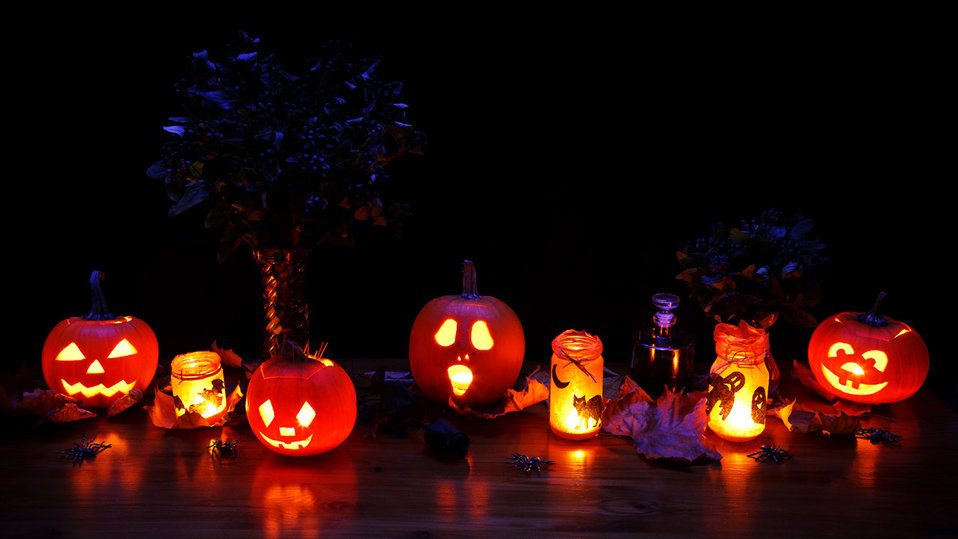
Halloween decoration

Illuminated pumpkins with halloween lights, spiders and autumn decoration on dark background.